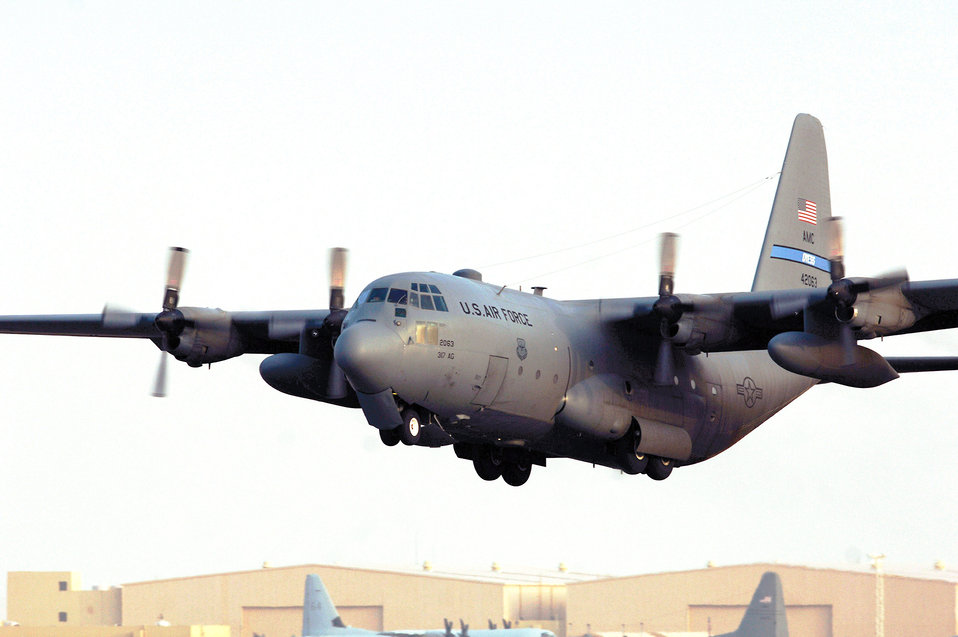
Jan. 26 airpower summary: C-130s support transport missions

An Air Force C-130 Hercules takes off for an airlift mission from a base in Southwest Asia. More than 130 airlift sorties were flown by coalition aircraft throughout the area of responsibility.